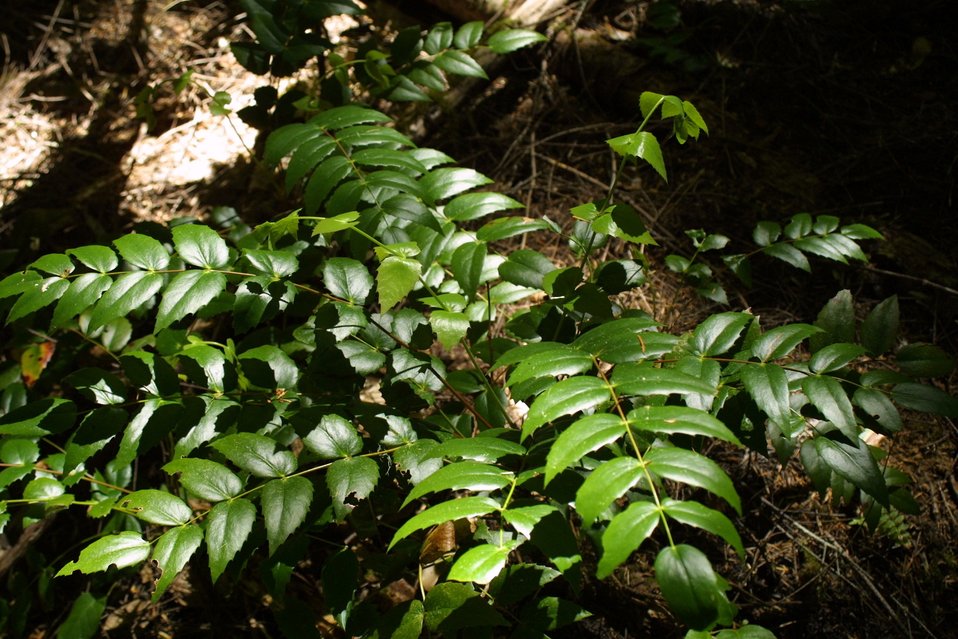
Camas East Timber Sale in Late Successional Reserve.